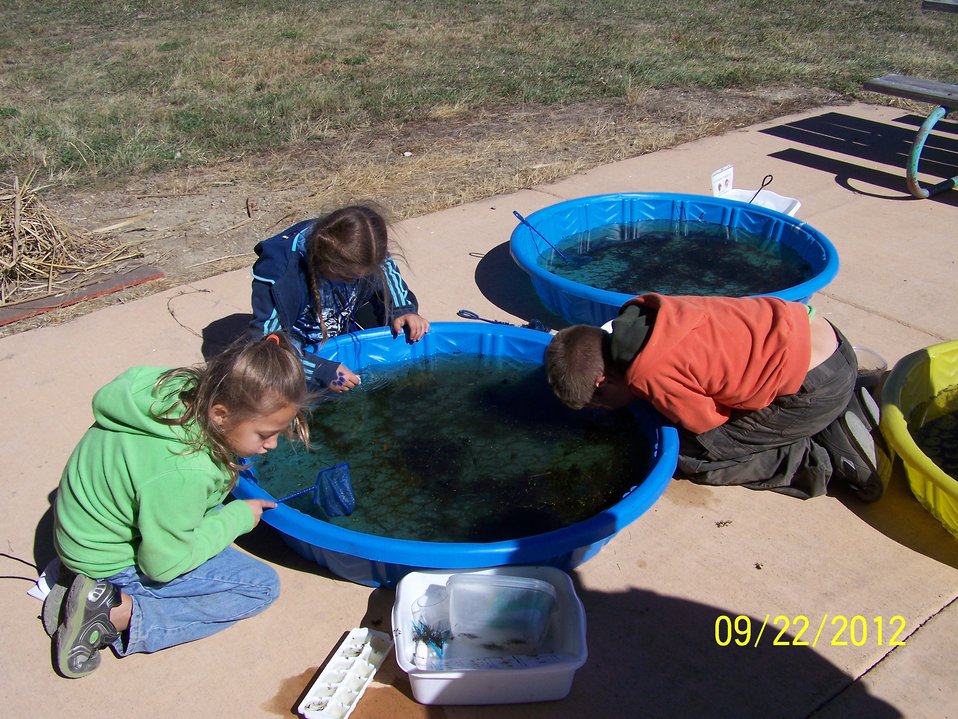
Prairie Fest 2012

Exploring wetland invertebrates.